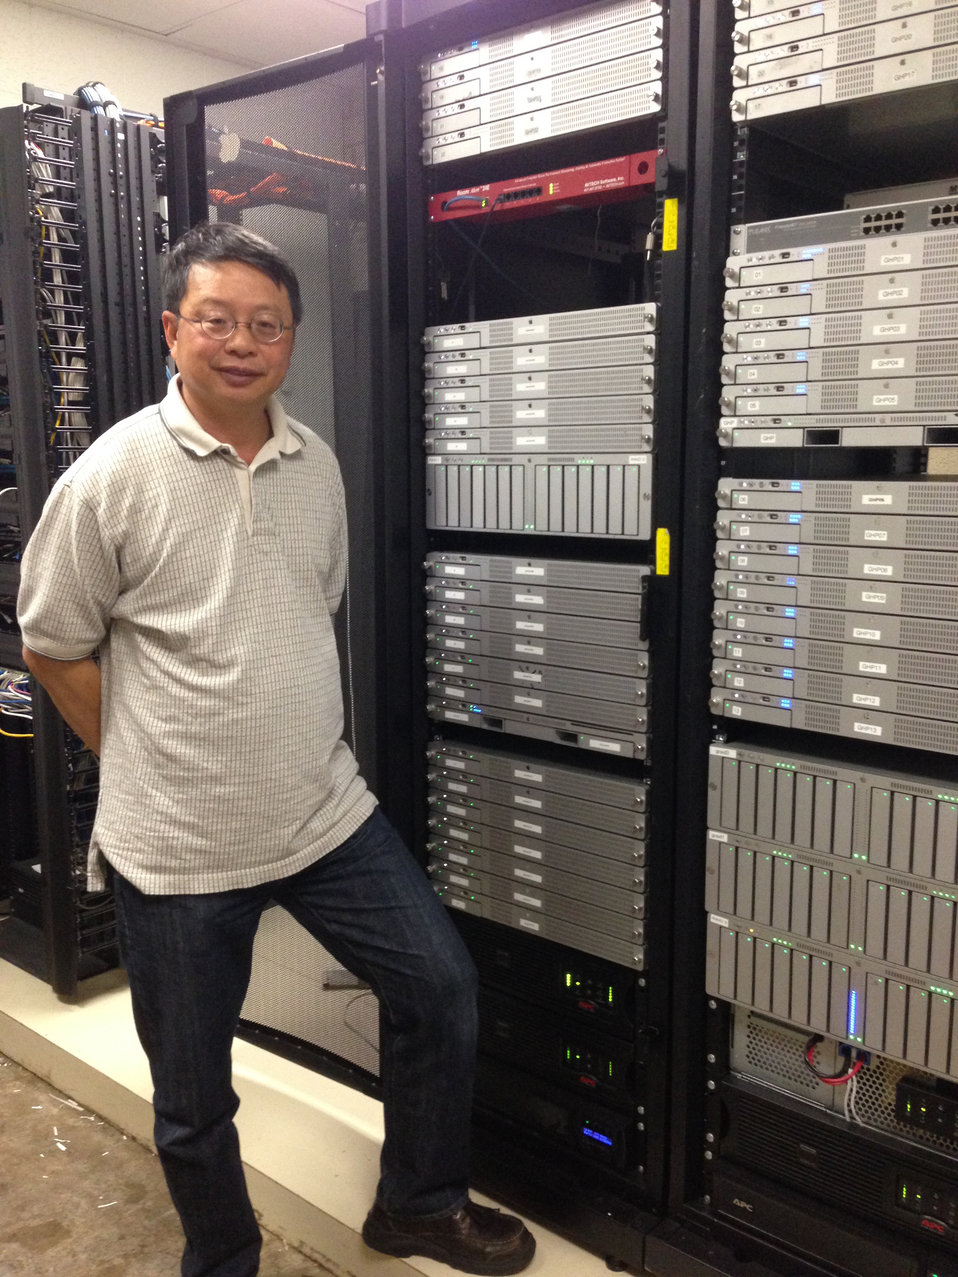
Shyh- Chin Chen blog photo 2

U.S. Department of Agriculture (USDA) U.S. Forest Service (USFS) meteorologist Shyh-Chin Chen developed a web tool he calls Firebuster that will deliver high-resolution weather information directly to firefighters on the ground. In Southern California, the firefighters fight in tough, mountainous terrain. Very complicated wind patterns travel through the hills and valleys, and the tool will offer firefighters information on a highly detailed scale that isn’t available anywhere else.